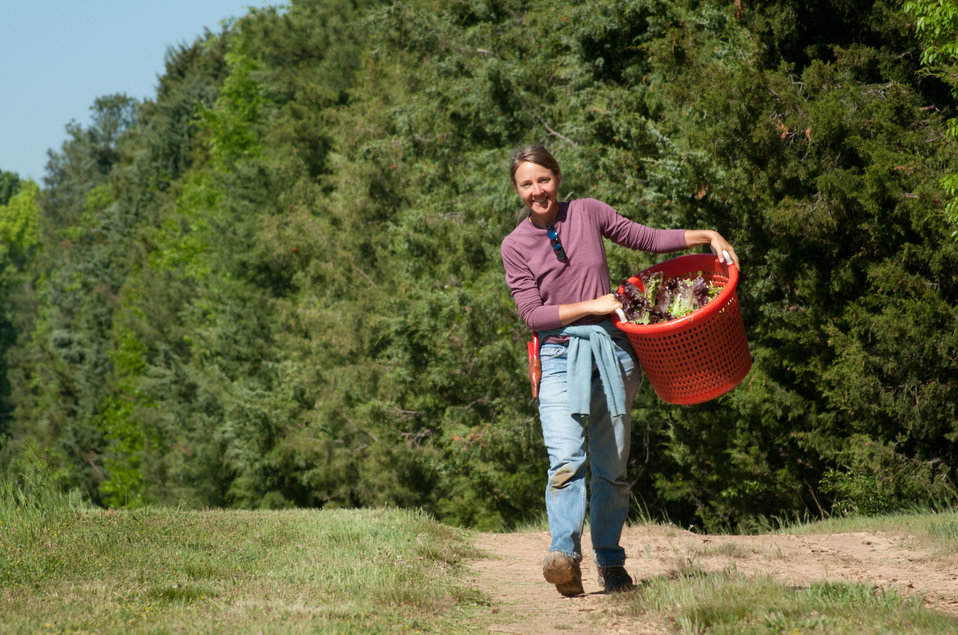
Amy's Organic Garden in Charles City, VA, on Thursday, May 5, 2011. Owner Amy Hicks harvesting greens at her farm. Ms. Hicks' farm participates with Fall Line Farms a local food cooperative in the Richmond, VA area that offers a wide variety of household food staples and specialty items on an ever changing inventory of fruits, vegetables, meats, soaps, eggs, cheeses, flowers, honey, pastas, sauces, syrups, baked goods, mushrooms, flour and grains. Suppliers post what they have on a Lulus Local Food online listing and customers can make their selection. Every Thursday suppliers deliver orders to, one of several pick-up points, designated by the customers in or around the Richmond area.